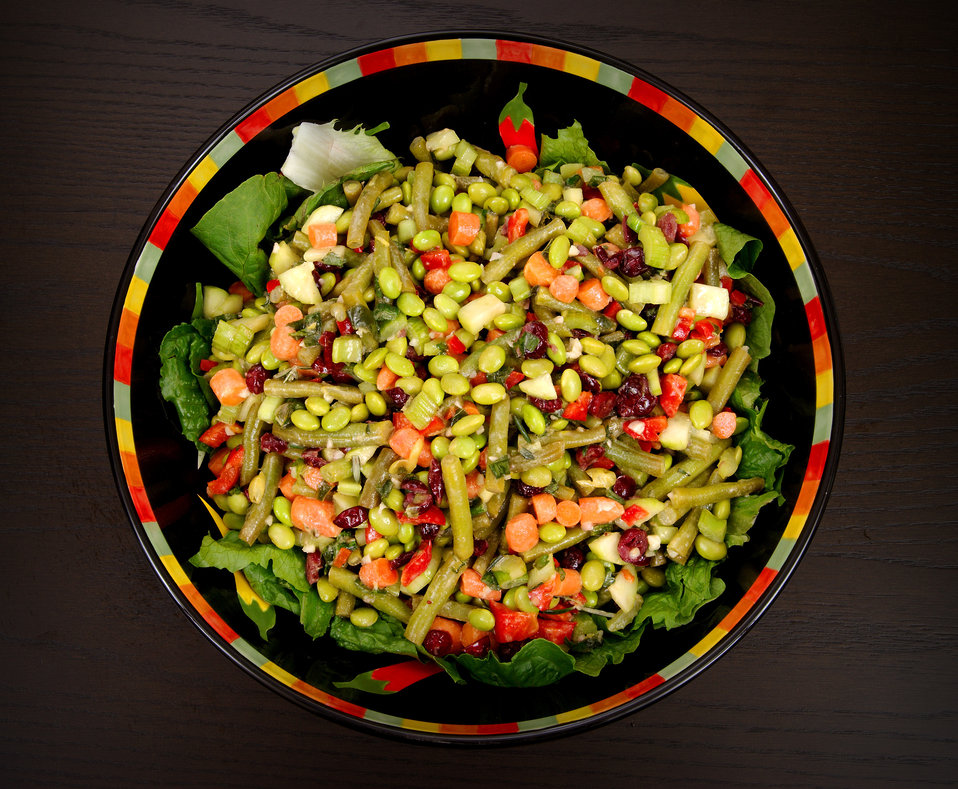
This photograph depicts a bowl filled with a freshly-prepared side dish of Marinated Edamame Salad. Built around the vitamin C-rich, fiber packed edamame, an immature soybean, other ingredients of this delicious salad include nutrient-dense green beans, green onion, red bell pepper, celery, cucumber, romaine lettuce, carrots, parsley, cranberries, olive oil, honey, Dijon mustard, lemon juice, garlic, wine vinegar, and spices. This flavorful salad is highly nutritious, and is a great choice as a lunch, or side dish.